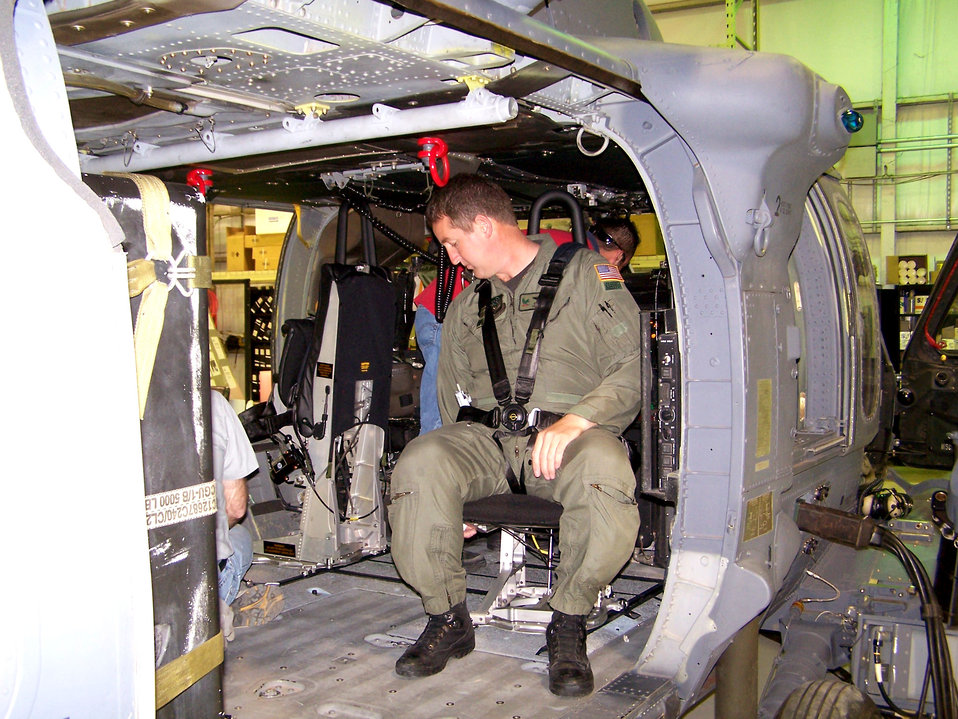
Reserve improves safety, floor space on rescue helicopters

DAVIS-MONTHAN AIR FORCE BASE, Ariz. -- Senior Master Sgt. Michael Flake checks out the new, more ergonomic crew cabin seats being installed in Air Force Reserve Command HH-60G Pave Hawk helicopters. By the end of the year, all 15 of the command's HH-60Gs will have new seats as well as new fuel tanks in the crew cabin area, giving pararescue and special operations teams more space to operate during combat-search-and-rescue missions. Sergeant Flake is the lead engineer for the seat replacement project and is assigned to the 305th Rescue Squadron here.